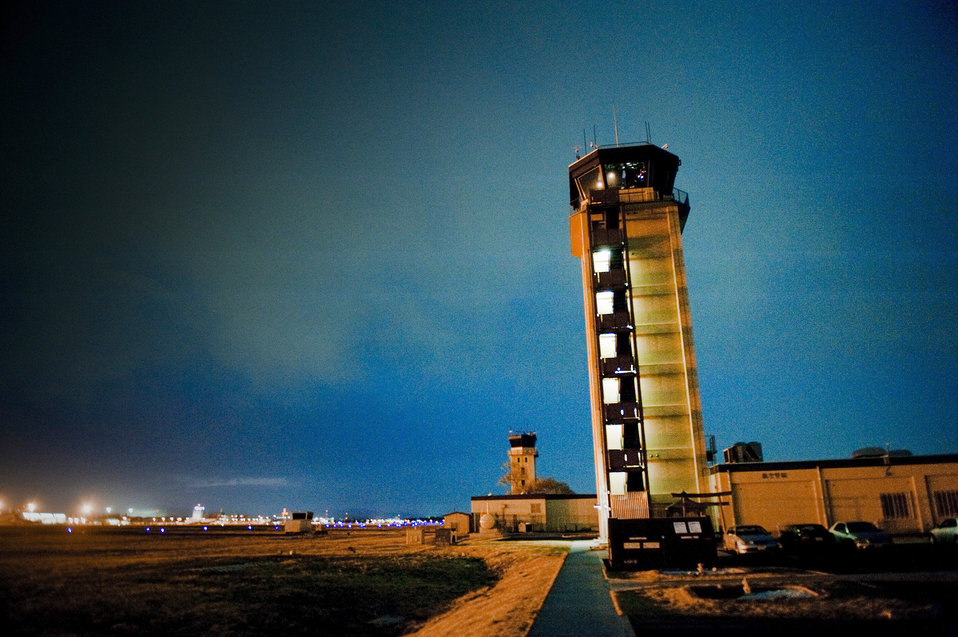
Yokota ATC Operation Tomodachi

The air traffic controller tower overlooks the flightline March 24, 2011, at Yokota Air Base, Japan. Yokota's flight line has received over triple the normal amount of aircraft due to Operation Tomodachi.Yokota AB's flightline has received more than triple the normal amount of aircraft due to Operation Tomodachi. The military and civilian aircraft have been from multiple nations carrying supplies, personnel and equipment in direct support of bringing relief efforts and trying to minimize human suffering following an earthquake and tsunami March 11.